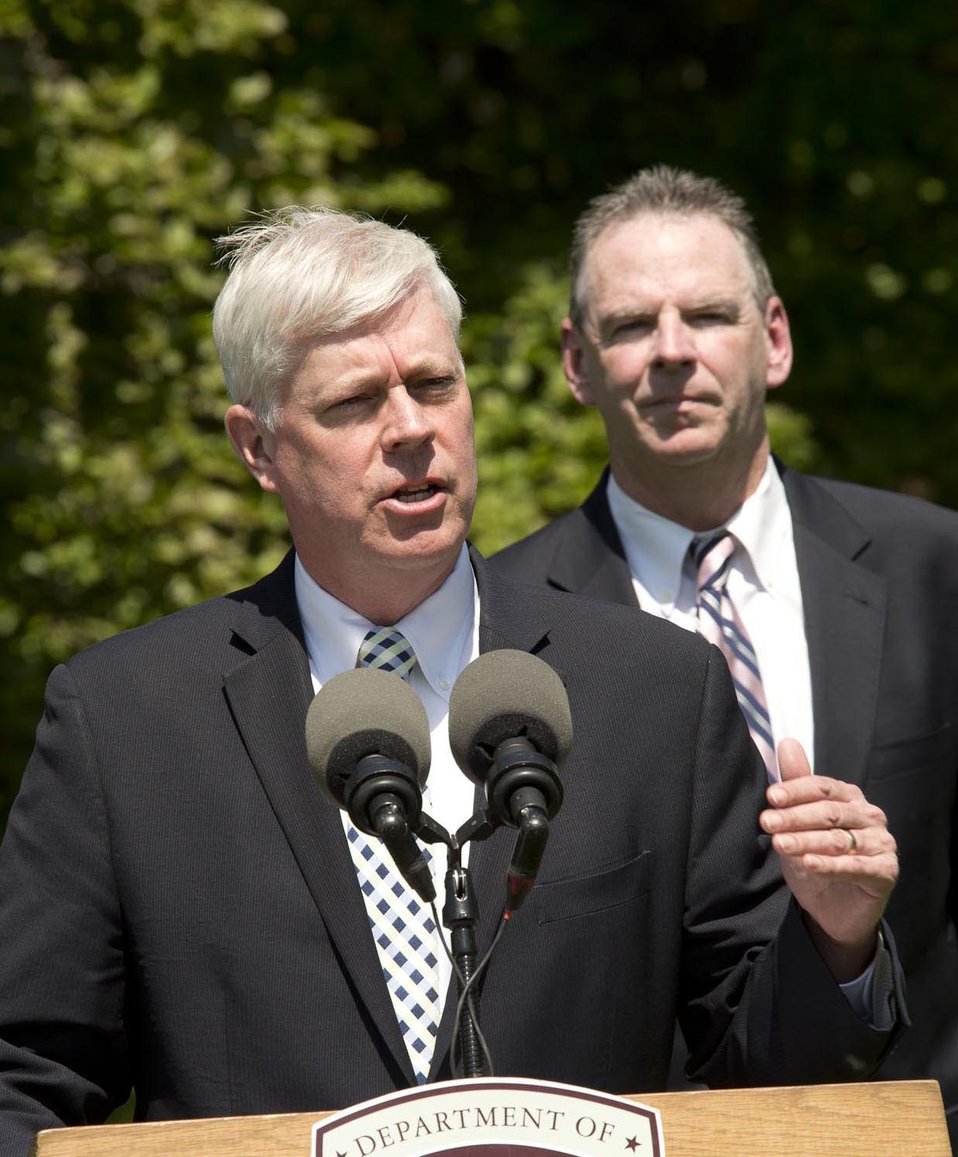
Executive Office of Energy and Environmental Affairs Secretary Richard Sullivan speaks at the declaration event for the eradication of Asian Longhorned Beetle (ALB) in Boston, MA on May 12, 2014. Federal, state and local officials joined together to announce that ALB has been eradicated from the Boston regulated area. Boston joins five other areas to declared eradication of ALB in the U.S.